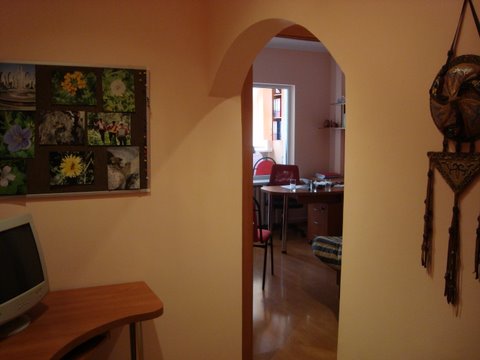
Examples of TIP Shelter Residents’ Photography Work Are Displayed on the Wall

Examples of the Trafficking-in-Persons (TIP) shelter residents are displayed on the wall in Almaty, Kazakhstan, on July 16, 2010.